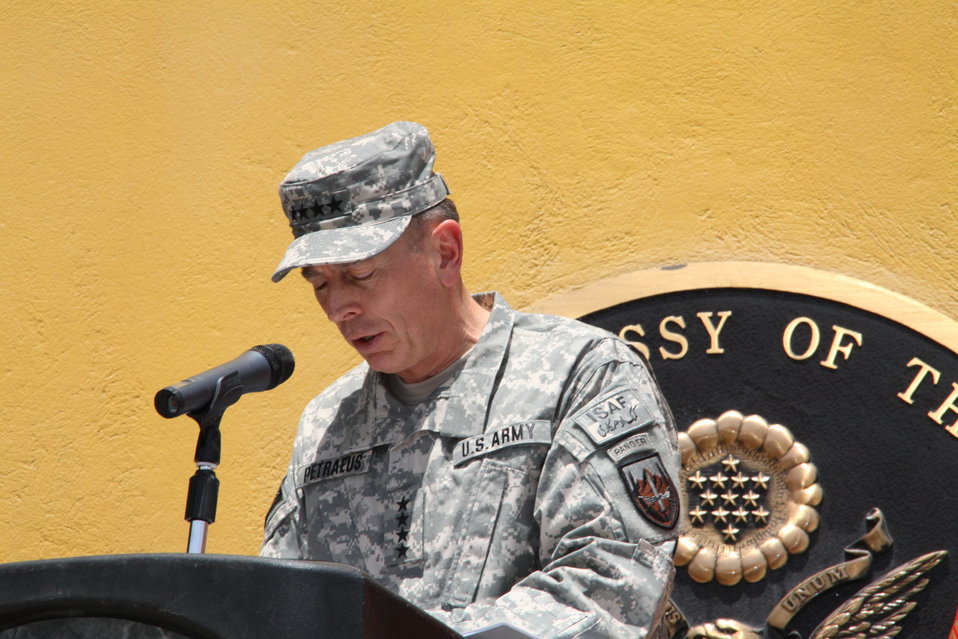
Kabul Official July 4th Celebration